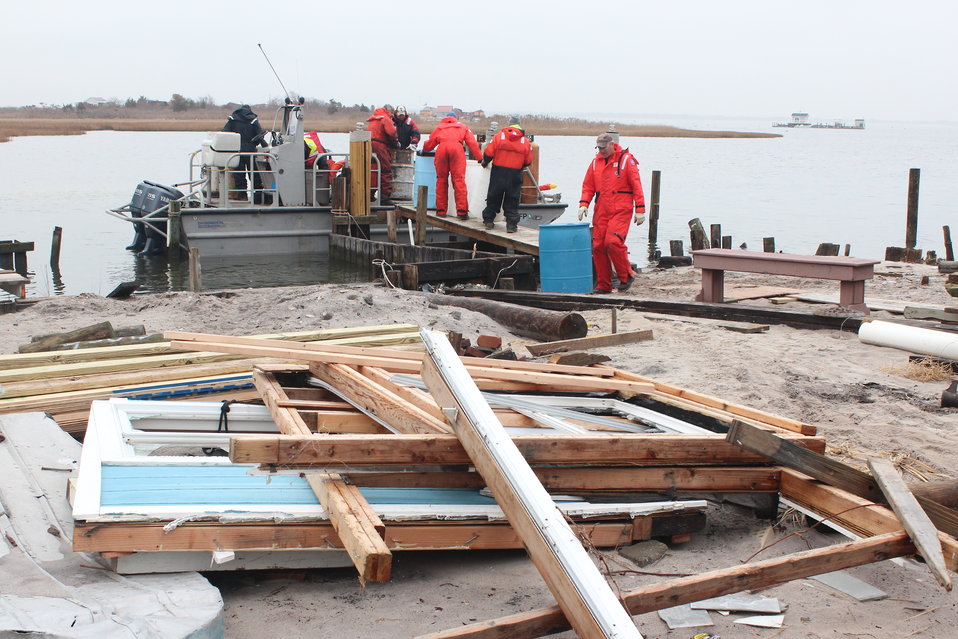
December 8, 2012 Loading up the boat among debris

The cold, damp weather and debris hazards had responders appreciating the mustang suits. These orange suits are primarily intended to keep you warm and afloat, should you end up in the winter water.